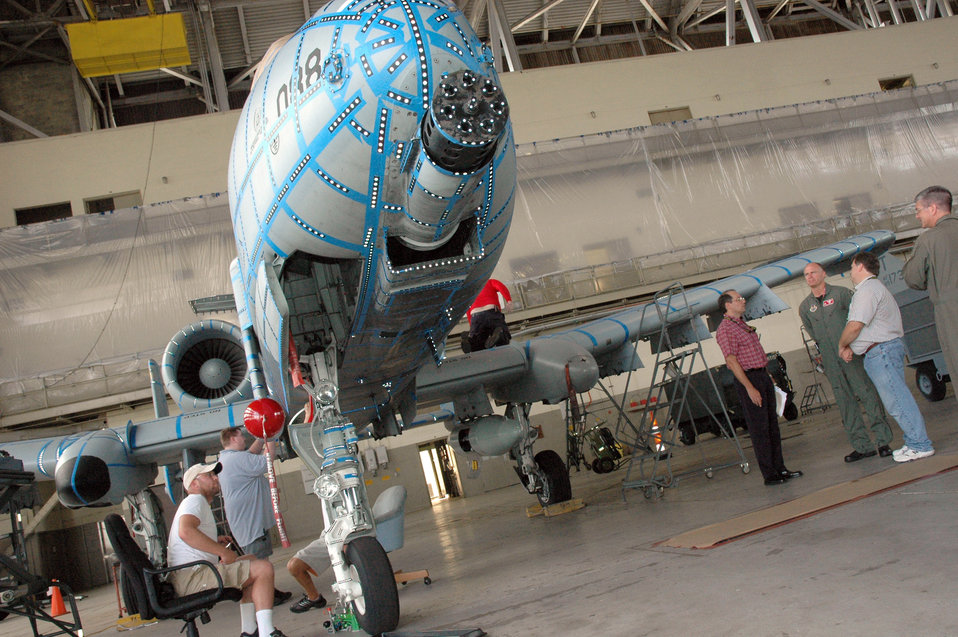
computerized diagnostic measurement

An A-10C Thunderbolt II undergoes computerized diagnostic measurement June 12 at Eglin Air Force Base, Fla. Using Virtual Surveillance Target Attack Radar System technology, the system will generate a 3-D image of the aircraft. The 3-D image will help engineers outfit the A-10 for smart weapons. This is the first time an A-10 has been digitally recorded.